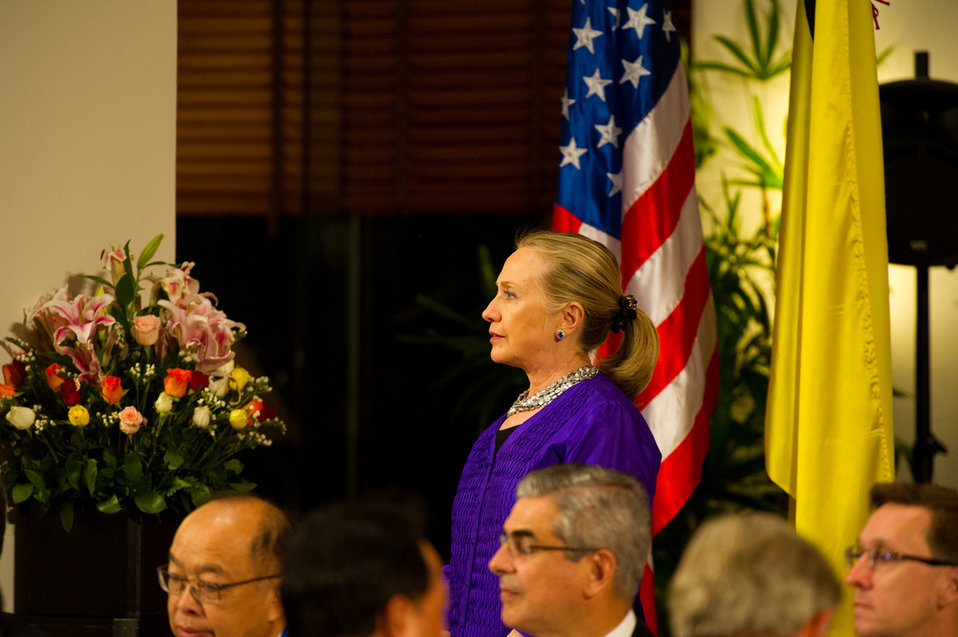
Secretary Clinton at the U.S.-ASEAN Business Forum and Dinner

U.S. Secretary of State Hillary Rodham Clinton participates in the U.S.-ASEAN Business Forum and Dinner in Siem Reap, Cambodia, on July 13, 2012.